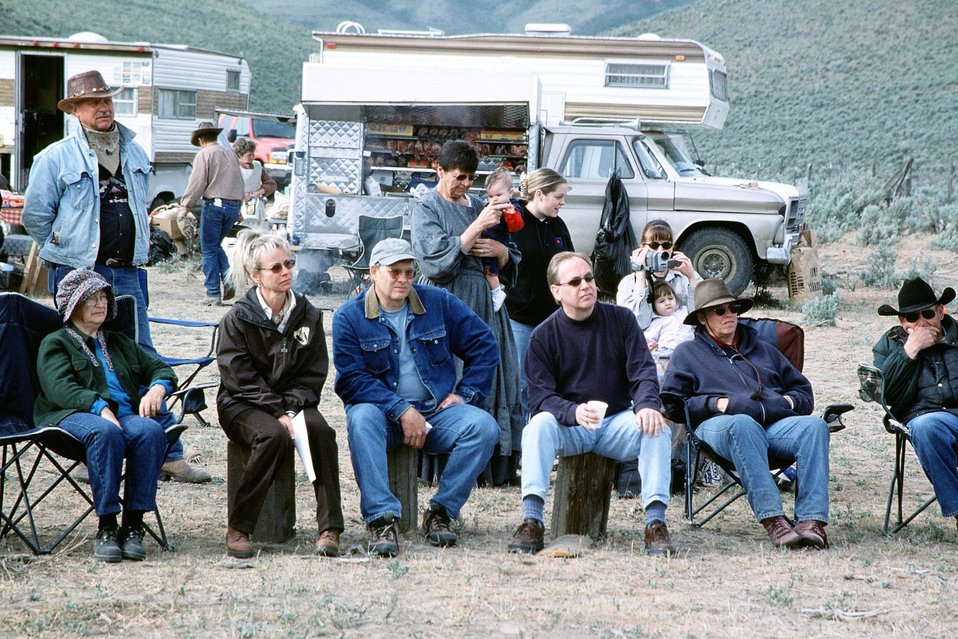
NHOTIC 10th Anniversary, wagon train reenactment. Group shot at encampment (Gay Ernst, NHOTIC Director, seated 2nd from left).